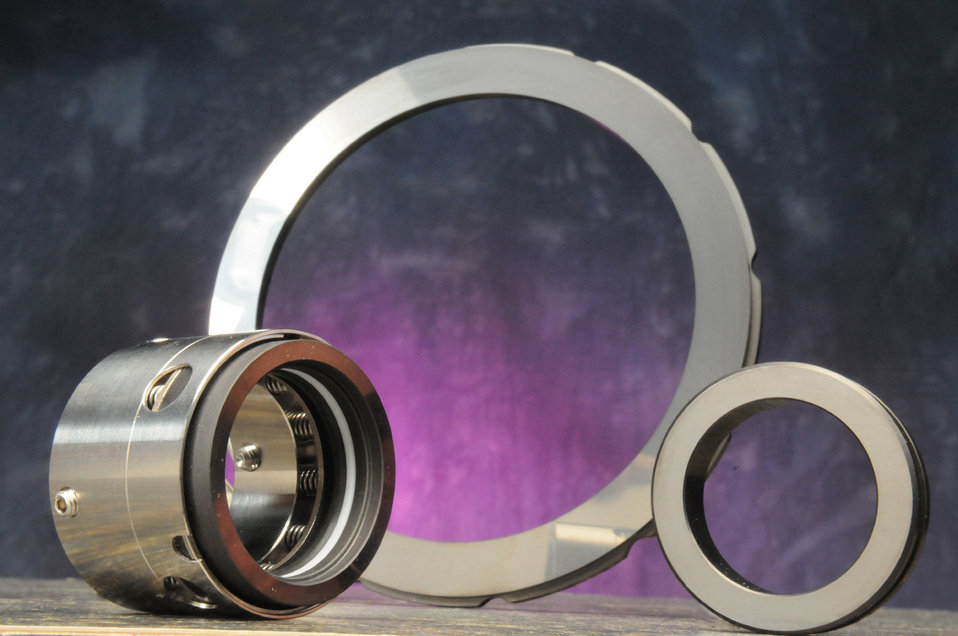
These ultrananocrystalline diamond-coated pump seals garnered one of Argonne National Laboratory's two 2008 R&D 100 awards.

The surfaces of these ultrananocrystalline-diamond (UNCD) mechanical seals are specially treated with a continuous film of tiny diamonds. This diamonds coating improves the pumps' reliability and ability to prevent fluids from escaping into the environment. UNCD is an engineered nanomaterials invented at Argonne. It consists of diamond grains two to five nanometers in diameter. UNCD marked the first ever affordable diamond film suitable for mass production of a wide range of diamond based microelectronmechanical system, nanoelectromechanical system devices, biodevices, biosensors and microelectronic circuits. Adjustments in the original production process made UNCD cost-effective for mechanical seals.